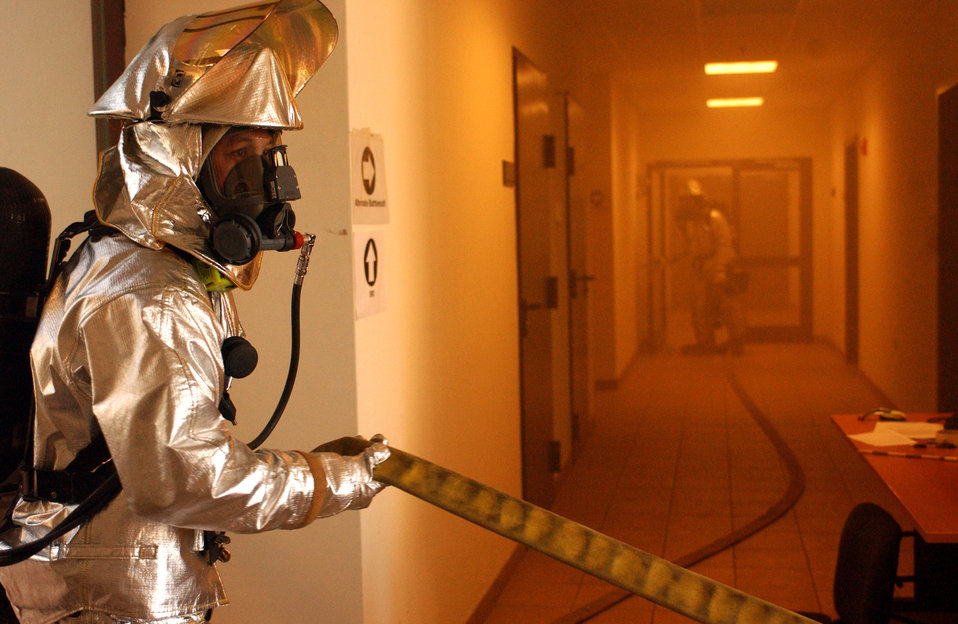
Exercise response

A firefighter brings a water hose into a building during a Local Salty Nation exercise at Aviano Air Base, Italy, on Tuesday, June 6, 2006. The firefighter is with the 31st Fighter Wing.